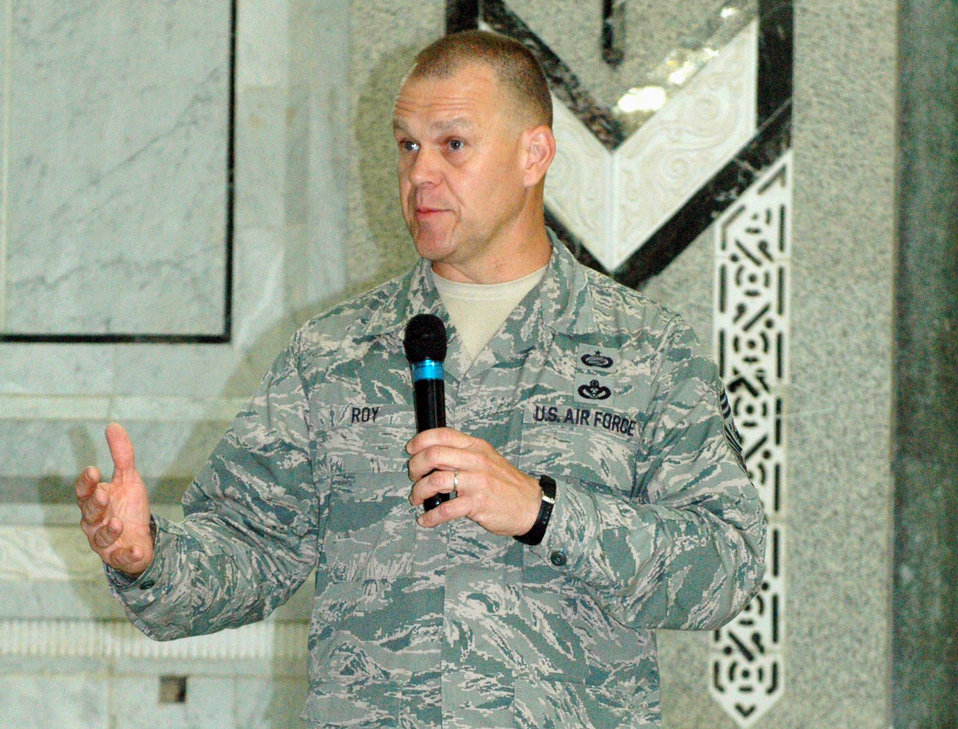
CMSAF visits Iraq

Chief Master Sgt. of the Air Force James A. Roy speaks to Airmen June 29, 2010, at the Victory Base Complex, Baghdad. During the meeting, the chief shared his top priorities and received feedback from Airmen. This visit also marked the chief's one-year anniversary as the top enlisted Air Force leader.